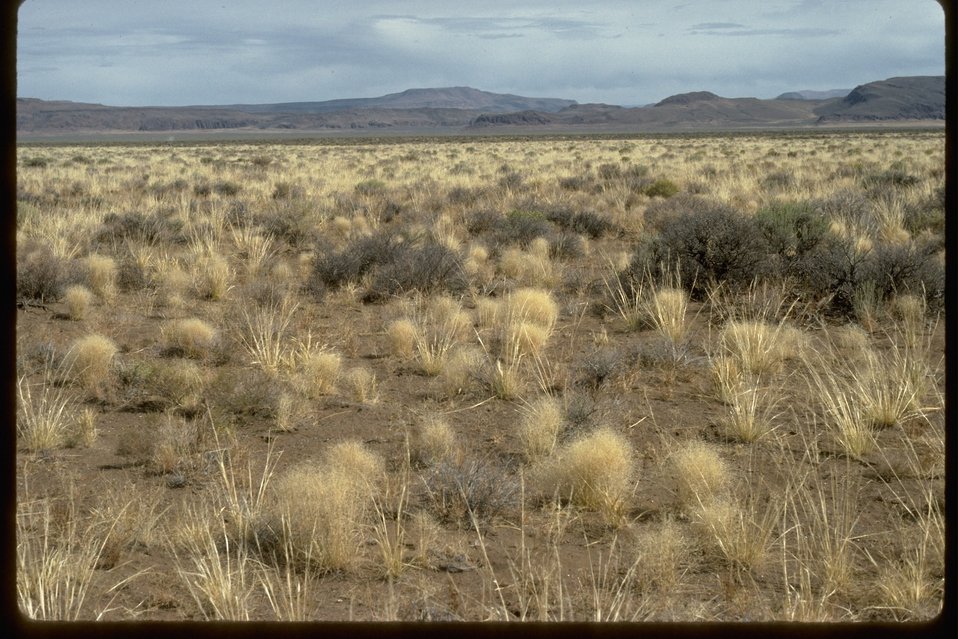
Needle grass stand in south Steens area.